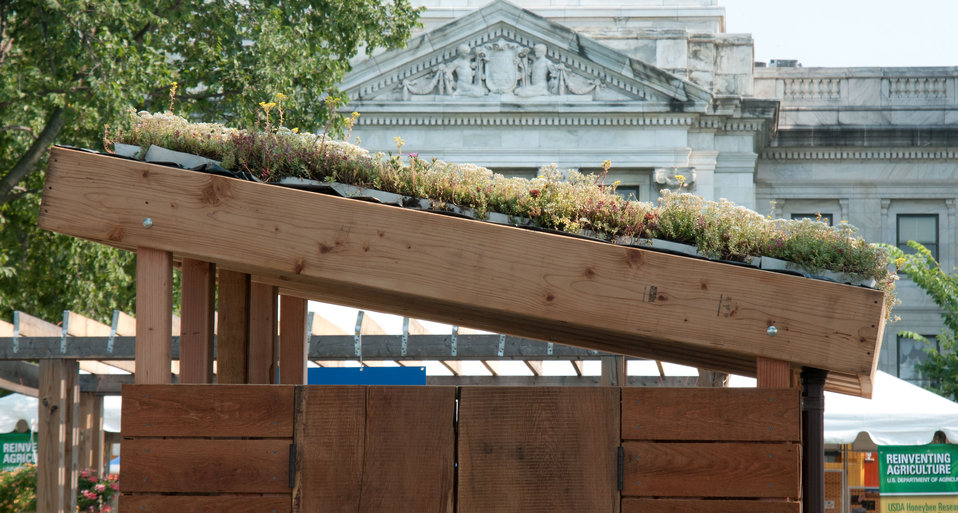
U.S. Department of Agriculture (USDA), People’s Garden Initiative, Green Roof Shed at the 2012 Smithsonian Folklife Festival, on the National Mall in Washington, D.C., on Thursday, June 28, 2012. The siding on this shed is made of recycled lumber from trees that came down in storms. Green roofs are attractive, practical benefits include additional thermal protection, noise reduction and increase the life expectancy of the roof. U.S. Department of Agriculture (USDA) partnered with the University of the District of Columbia’s (UDC), Department of Agriculture and Urban Design on the design and construction of this shed. UDC is a Land Grant university. For more information and answers to questions such as how do you build a roof to accommodate a green roof? And is it possible to modify an already built roof to add a green roof? Go to blogs.usda.gov/2012/07/05/going-green-green-roofs-and-rai... One of the three themes this year is “Campus and Community.” It celebrates the 150 years of the USDA and the Land-Grant University System. The U.S. Department of Agriculture (USDA) and the Land-Grant system extend education across the country, contributing to American agriculture success and rural prosperity. “Campus and Community” has demonstrations, discussions, hands-on activities, and entertainment to that showcase the many ways that this partnership works to improve American agriculture and rural life.